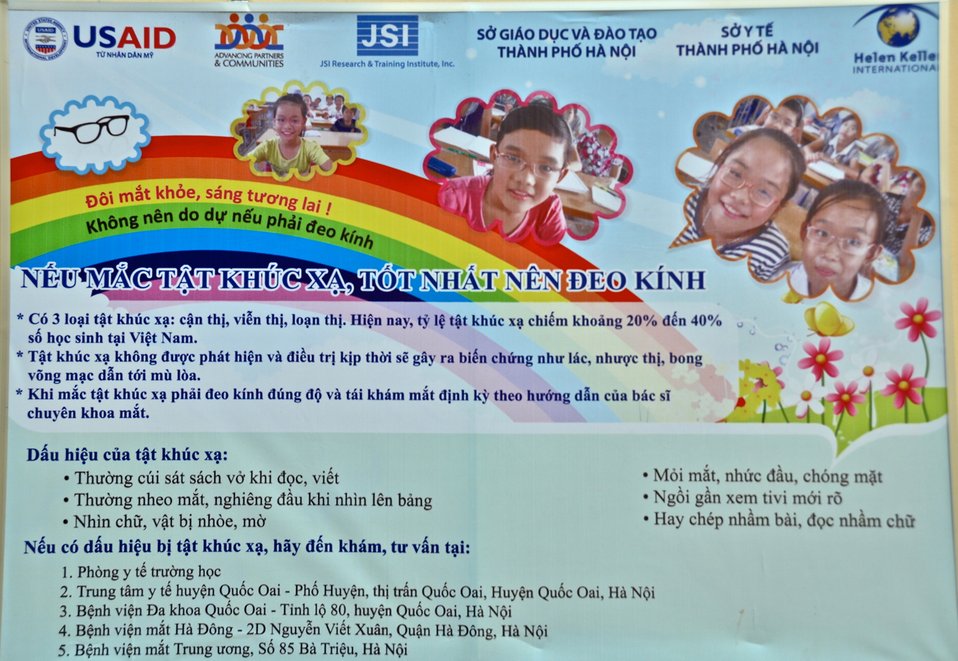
USAID supports distribution of eyeglasses to pupils and teachers in Quoc Oai, Hanoi.

Quoc Oai, Hanoi, December 23.